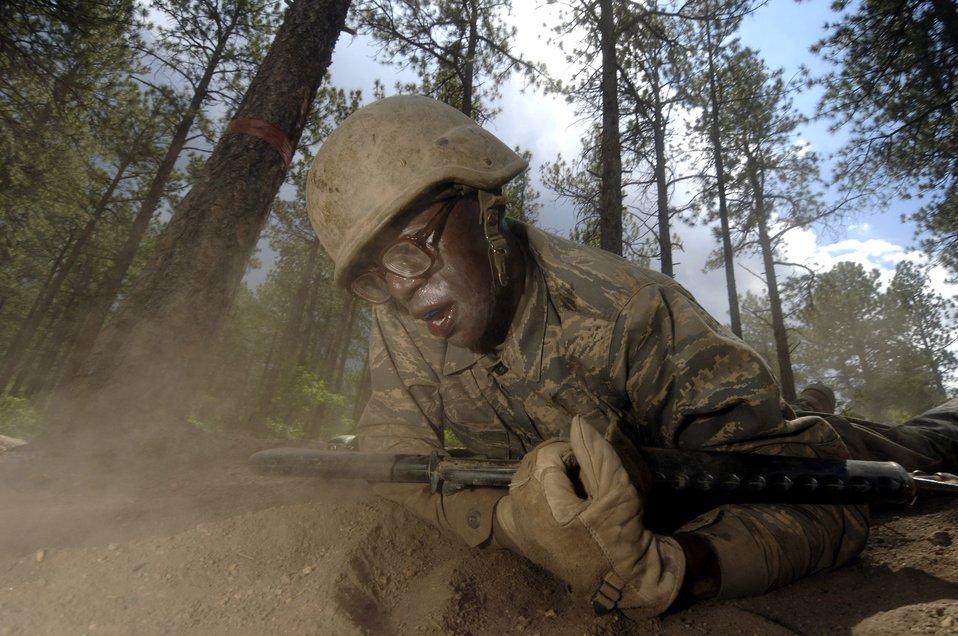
Need fresh air...

U.S. Air Force Academy Basic Cadet Michael Provost low crawls a section of the assault course July 25 during basic cadet training in the Jacks Valley training area near Colorado Springs, Colo.